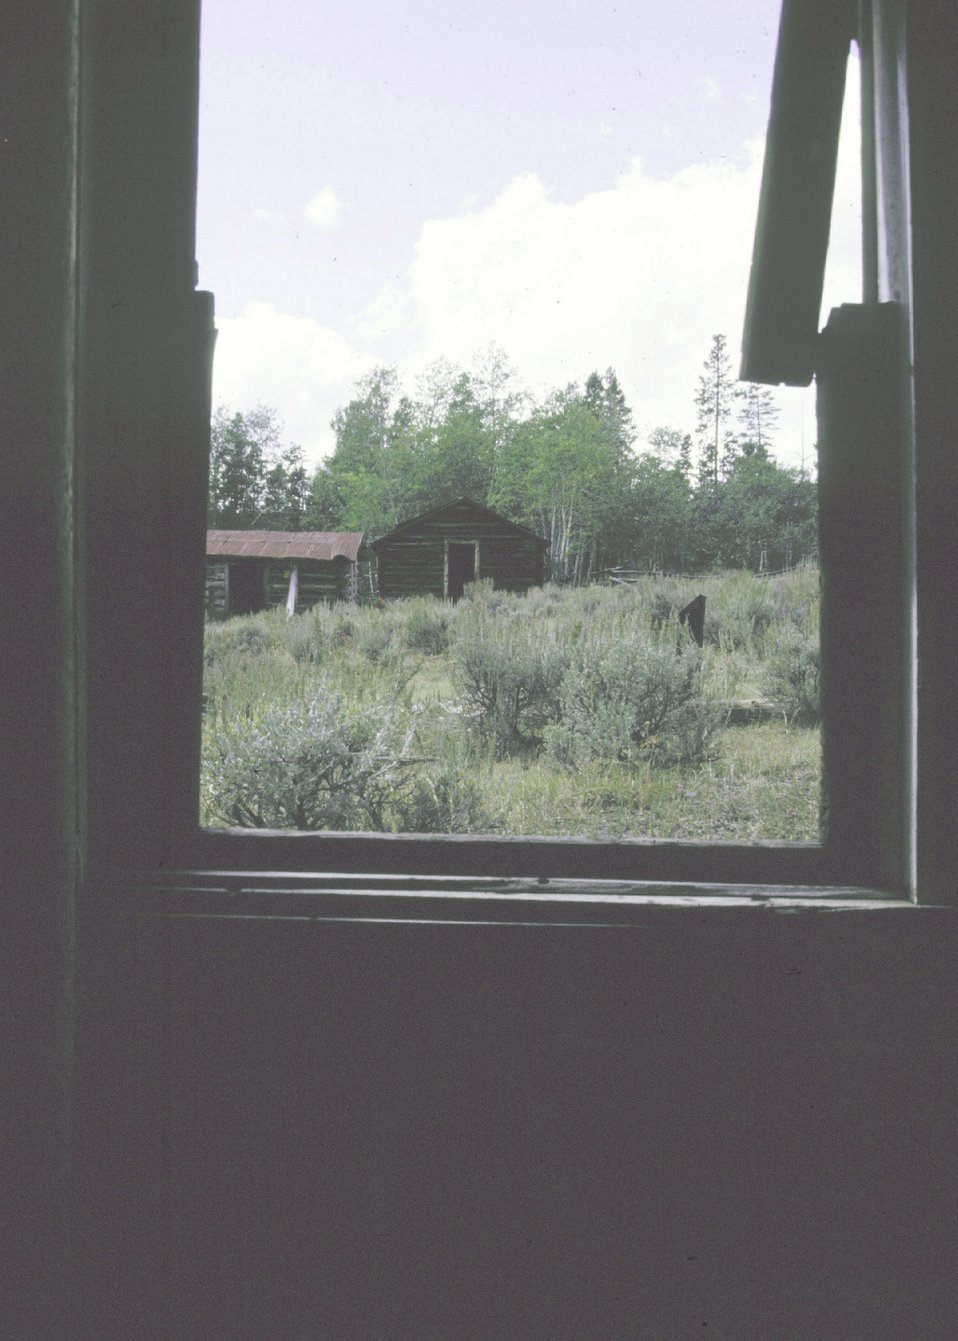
A framed window view of Miner's Delight in South Pass, Wyoming.